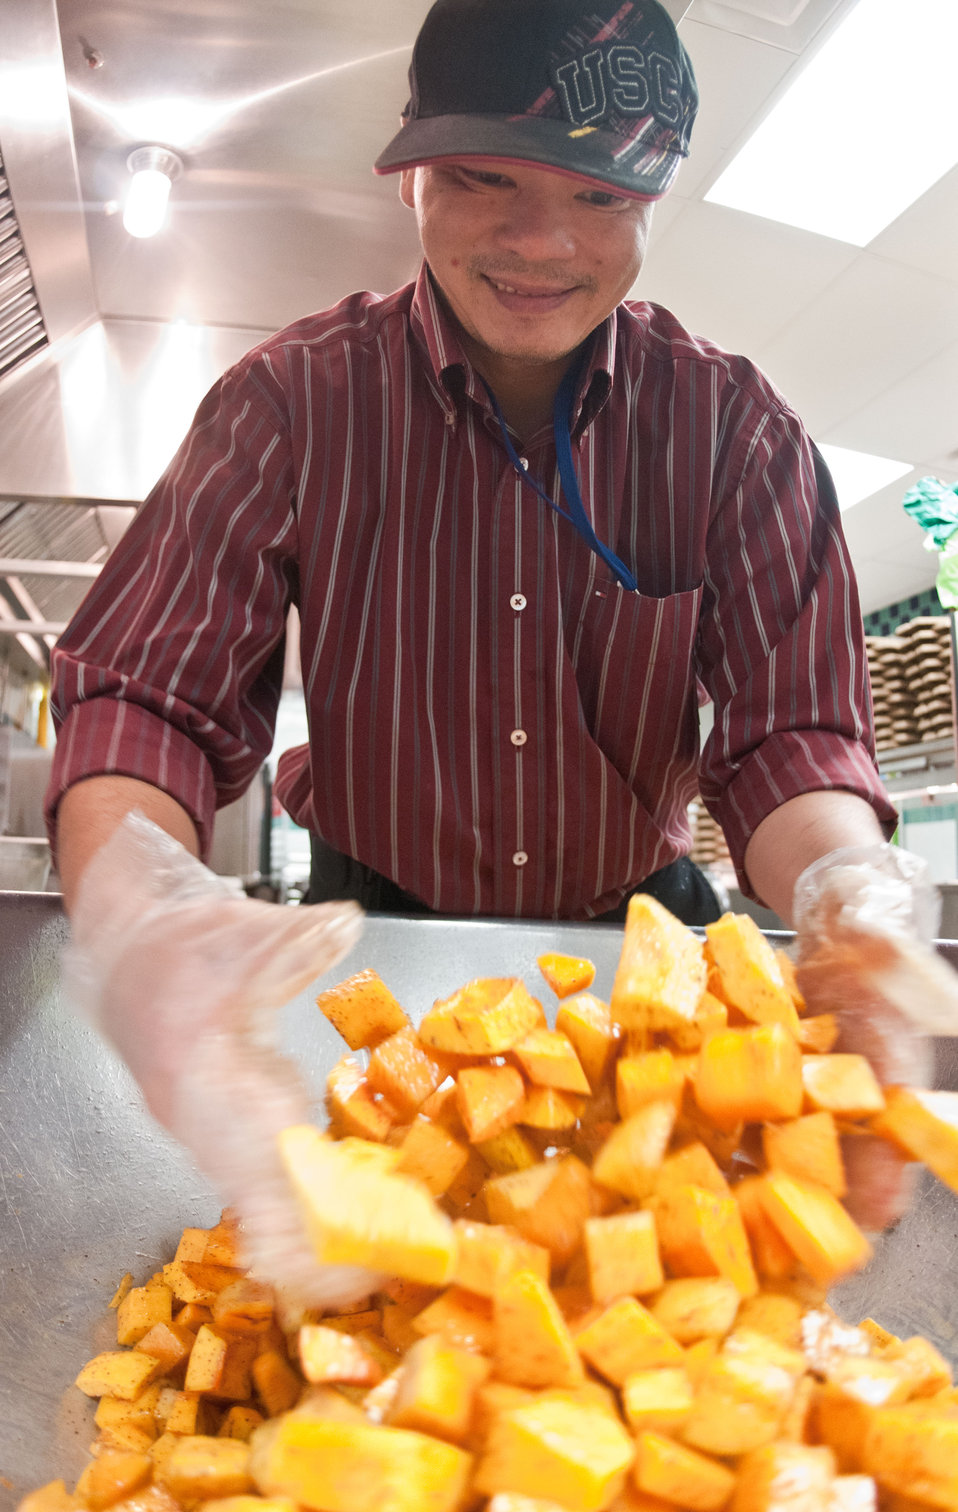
Arlington Public Schools, Food Services Specialist Thai Nguyen mixed cubed butternut squash with seasoning before roasting in an oven at Nottingham Elementary School in Arlington, VA, on Wednesday, October 12, 2011.